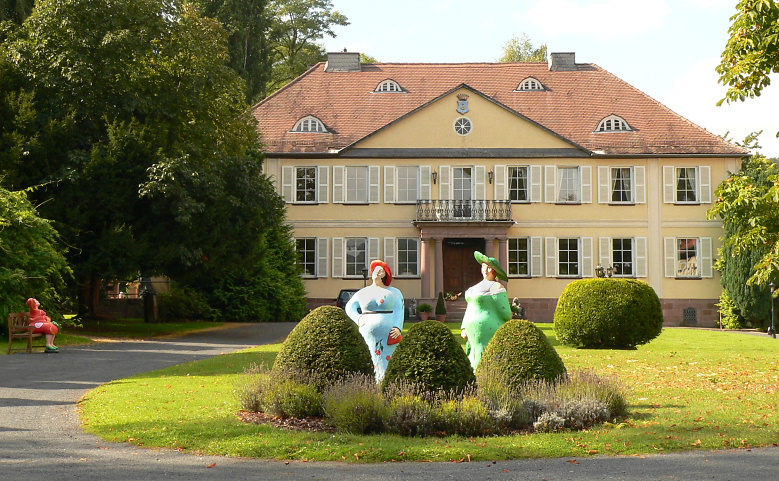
Deutsch: Schloss Bad Zwesten